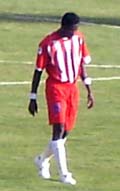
i did Take this Photo in 11 June stadium during the Libyan Premier league Match Between Al Ittihad Vs Al Al Ahly Tripoli By my Sony p200 Digital cam. the date of this photo is 11-8-2006. sorry for the bad quality of the photo